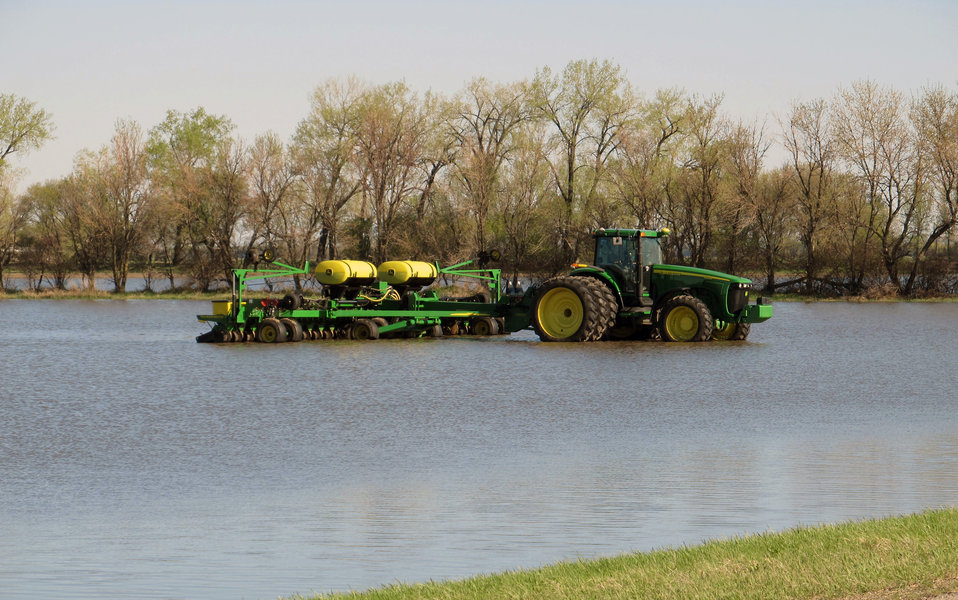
Flooding and water damage in the Park and Tongue River Watersheds located in Cavalier, Pembina and Cavalaier Counties in ND on Thursday, May 23, 2013.